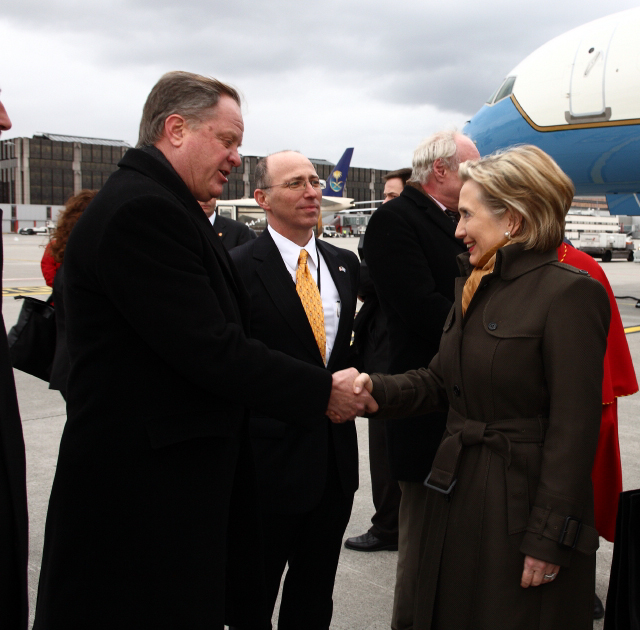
Arrival in Geneva, Switzerland

U.S. Secretary of State Hillary Rodham Clinton arrives in Geneva, Switzerland March 6, 2009.